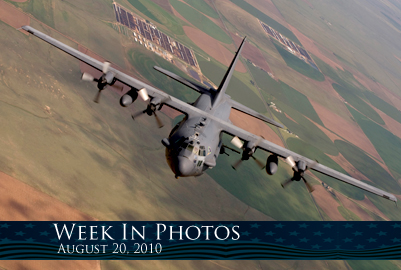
Air Force Week in Photos for Aug. 20, 2010, highlights photos from around the Air Force. In this photo by Master Sgt. Jack Braden, an AC-130 Spectre from the 16th Special Operations Squadron flies a training mission Aug. 11, 2010, at Cannon Air Force Base, N. M.